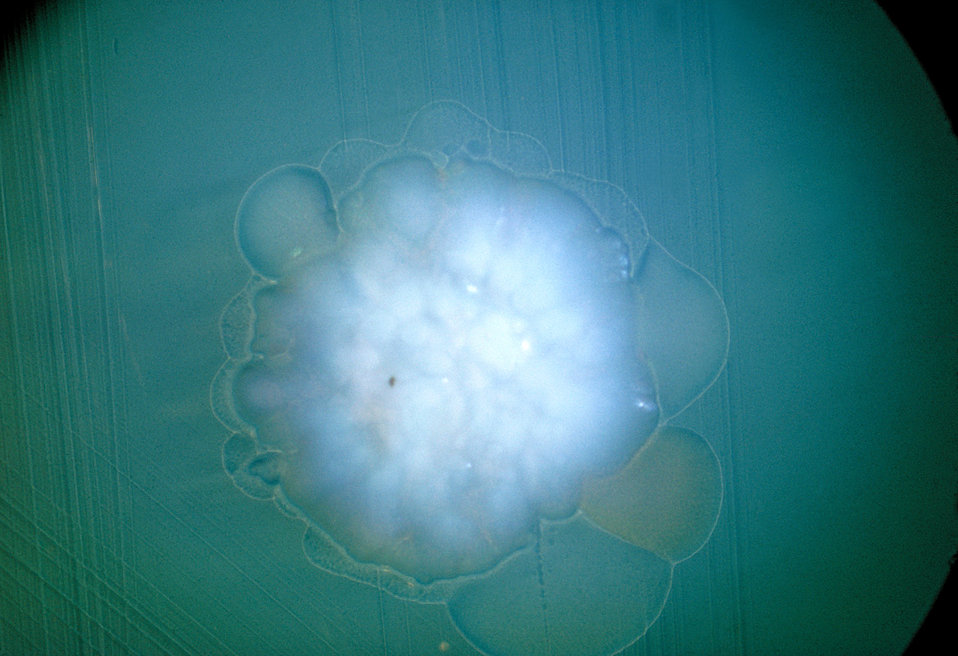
A BHI agar plate culture of Actinomyces sp., strain X-407, at 7 days, incubated anaerobically.